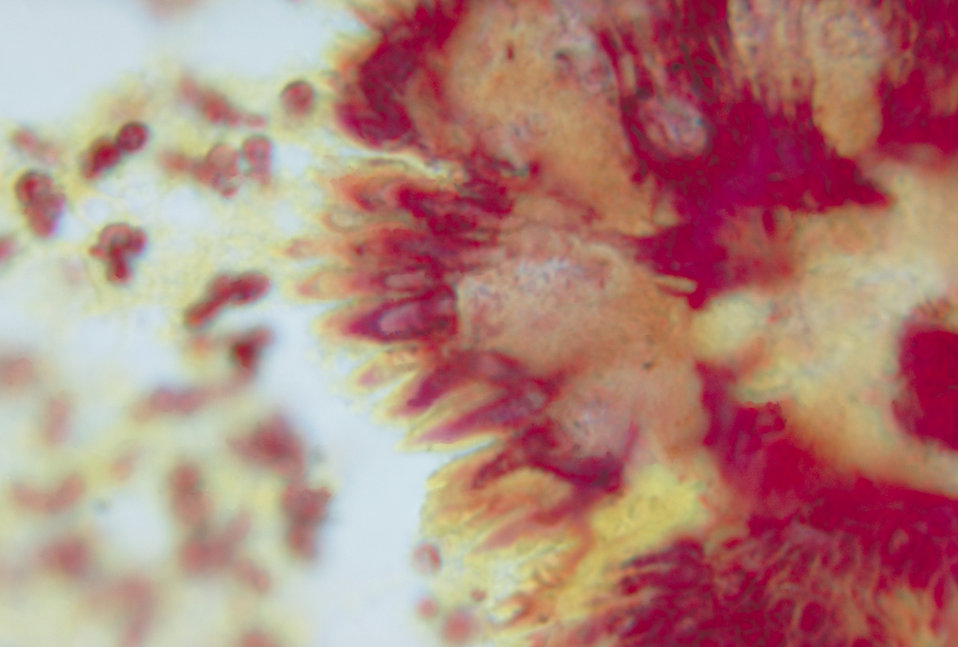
Note the histopathologic changes in a case of botryomycosis due to Pseudomonas aeruginosa using a Brown-Brenn stain.